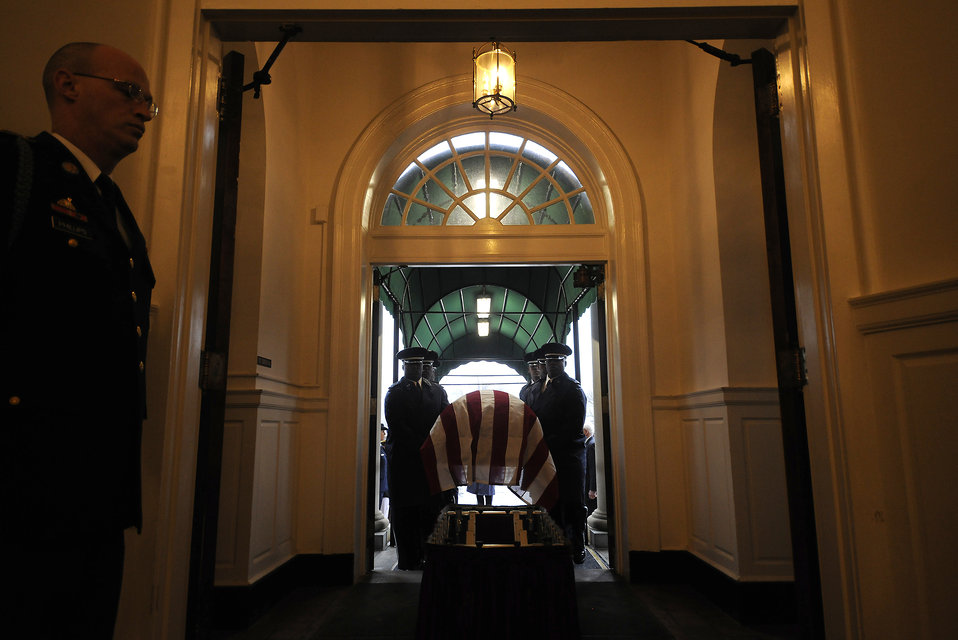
Maj. Gen. Jeanne M. Holm Funeral

U.S. Air Force Honor Guard pall bearers carry the casket of Maj. Gen. Jeanne M. Holm into the Old Post Chapel on Joint Base Myer-Henderson Hall, Va., near Arlington National Cemetery, March 29, 2010, before she was laid to her final rest in Arlington. General Holm, born in 1921, enlisted into the Women's Army Auxiliary Corps in 1942 and was commissioned a third officer -- a 2nd lieutenant equivalent -- in 1943.